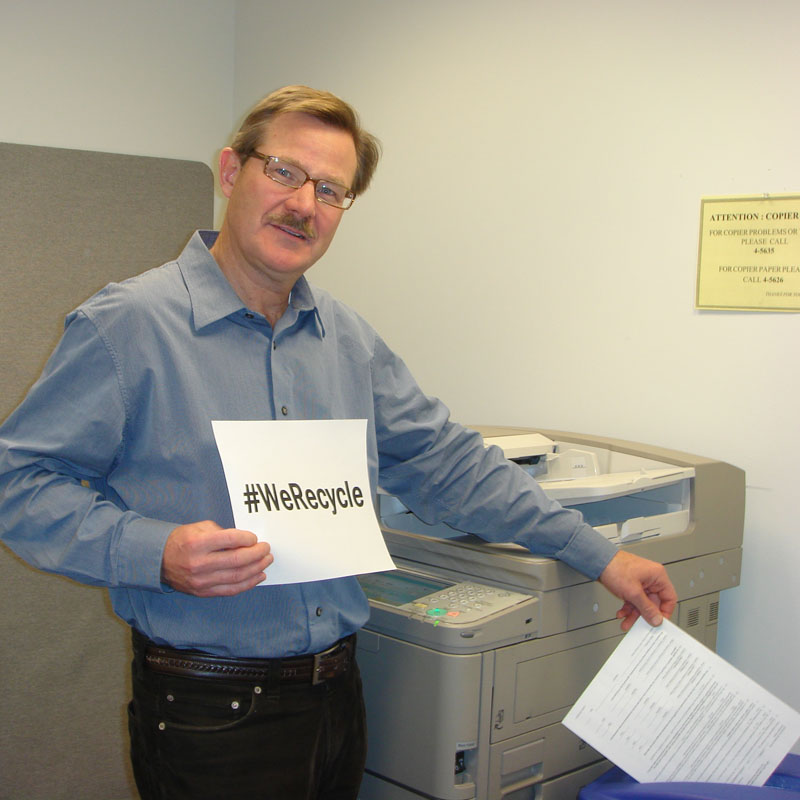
EPA Employee Dave Recycles

At EPA, #WeRecycle. Learn how you can too: www2.epa.gov/recycle